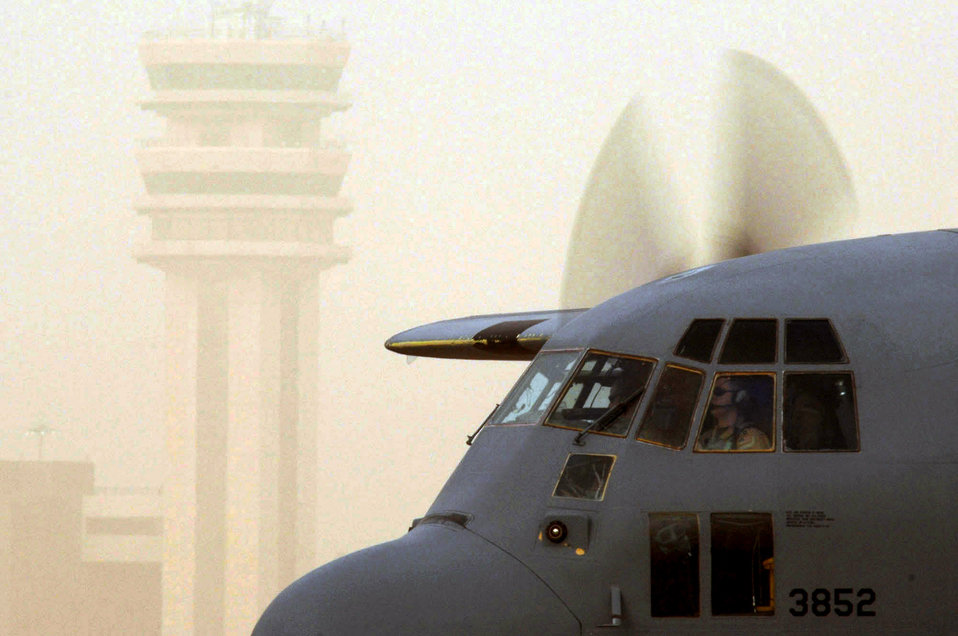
Now boarding

A C-130 Hercules taxies to a parking spot during a Jan. 30 dust storm at Sather Air Base, Iraq. Baghdad International Airport recently activated a instrument landing system, which allows pilots to use aircraft instruments to land in low visibility conditions like a dust storm. Sather AB is located on the west side of Baghdad International Airport and base Airmen move 6,200 passengers weekly and more than 1,700 tons of cargo weekly.